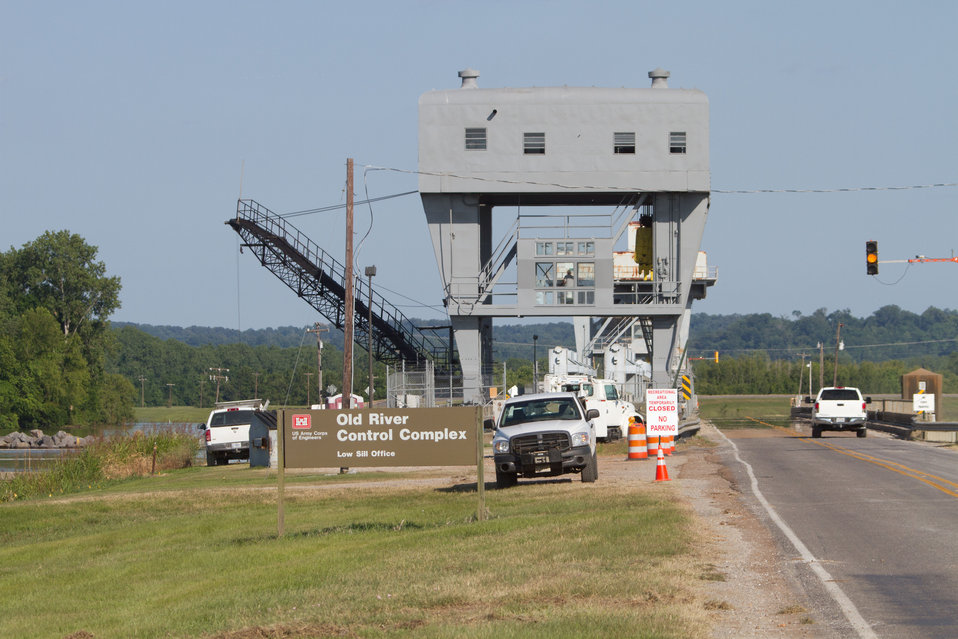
The Army Corps of Engineers conduct daily depth measurements along the intake side of The Old River Control Complex, Low Sill Structure in Concordia Parish, LA, on Tuesday, May 17, 2011. The measurements tell both the condition along the intake “ramp” and allow them to calculate the flow through the gates. The Old River Control Complex is designed to channel as much as 30 percent of the Mississippi River’s flow into the Gulf of Mexico through it’s eleven 44-foot wide gates across 566 foot span that separates the Mississippi and (the outflow channel to the) Red and Atchafalaya Rivers. Rated at 300,000 million gallons per minute (note: That’s more than seven Olympic sized swimming pools every second). Although this helps the Mississippi River, it (along with other concerns, puts back pressure on the Red River and other waterways, possibly causing some flooding of farms to avoid a catastrophic breech of the levee system. Most of the gates have been opened by a rolling crane and stored in racks. Debris, some as larger than telephone polls make their way through the gates and pool in eddies. The constant motion and contact with other objects, strip trees of their branches and bark. 20-30 pound Carp can frequently be seen jumping out of the white water.